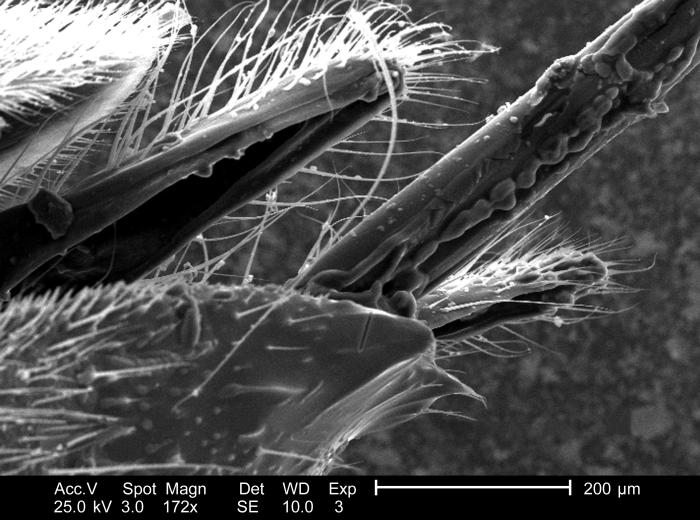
From a lateral perspective, and under a moderately high magnification of 172x, this scanning electron micrograph (SEM) depicted some of the ultrastructural morphologic details seen at the proximal region of the stinger apparatus of an unidentified hymenopteran insect found deceased in the Decatur, Georgia suburbs. The Order of Hymenoptera includes bees, wasps, ants, and sawflies. Judging from the smooth nature of this stinger shaft, this was probably something other than a honeybee, whose stinger shaft would have displayed more defined, broader barbs at the distal tip. The smoother nature of the shaft, would have allowed the stinger to have been easily extracted without it becoming inextricably embedded when it was penetrating a victim's skin, as is the case with the Western honeybee, Apis mellifera.